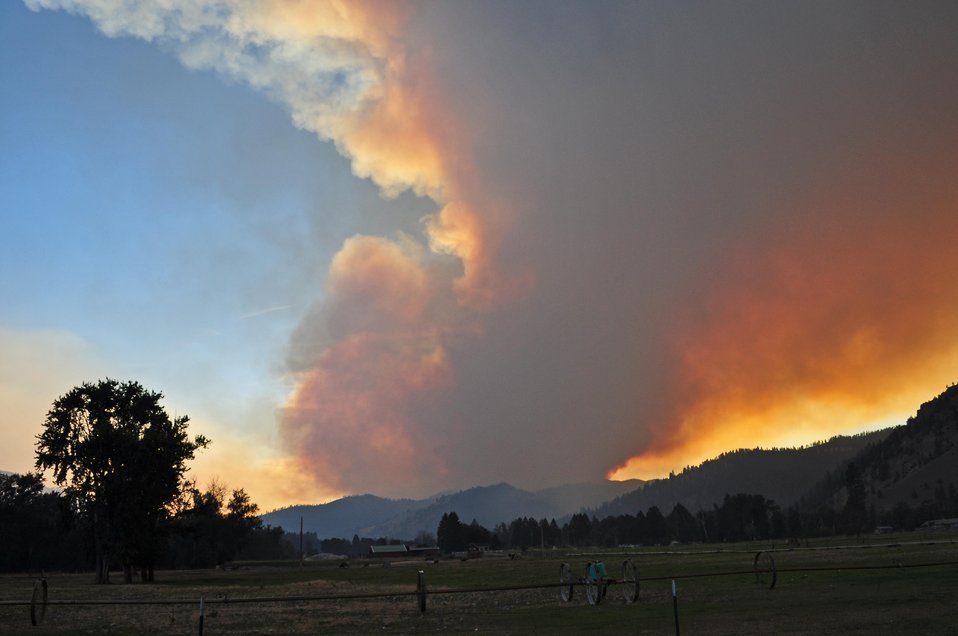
The Lolo Creek Fire in the Lolo National Forest near Lolo, MT began on Aug. 18, 2013 by lightning has consumed approximately 10,892 acres and is 47% contained.